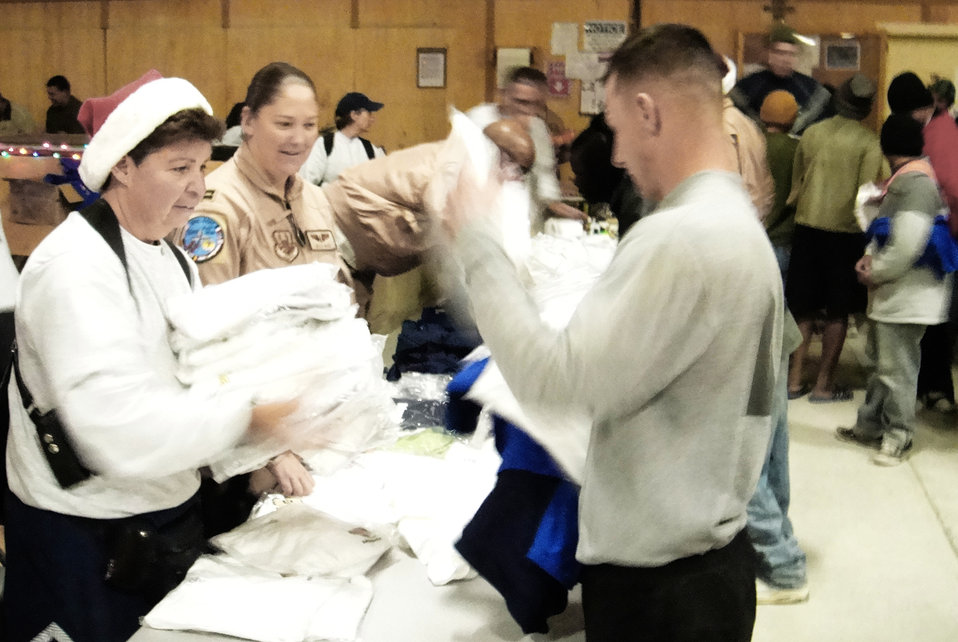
Caring Airmen, American citizens clothe wounded warriors

Master Sgt. Debra Leddy and Capt. Kelly Rose assist a Soldier Dec. 17, 2009 at kandahar Airfield, Afghanistan. Airmen from the 451st EAEF provided a portion of excess clothing and supplies to servicemembers at Kandahar once a week. These donations were after supplying other forward operating bases, aeromedical evacuation teams and hospitals with supplies donated by American citizens for wounded servicemembers. Sergeant Leddy and Captain Rose are from the 451st Expeditionary Aeromedical Evacuation Flight.